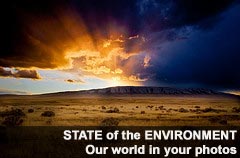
Spread the word!

Copy and paste this code under great photos that you find in Flickr!

Great photo! Consider adding it to: Official EPA and NARA Group Thank you for sharing your photos!